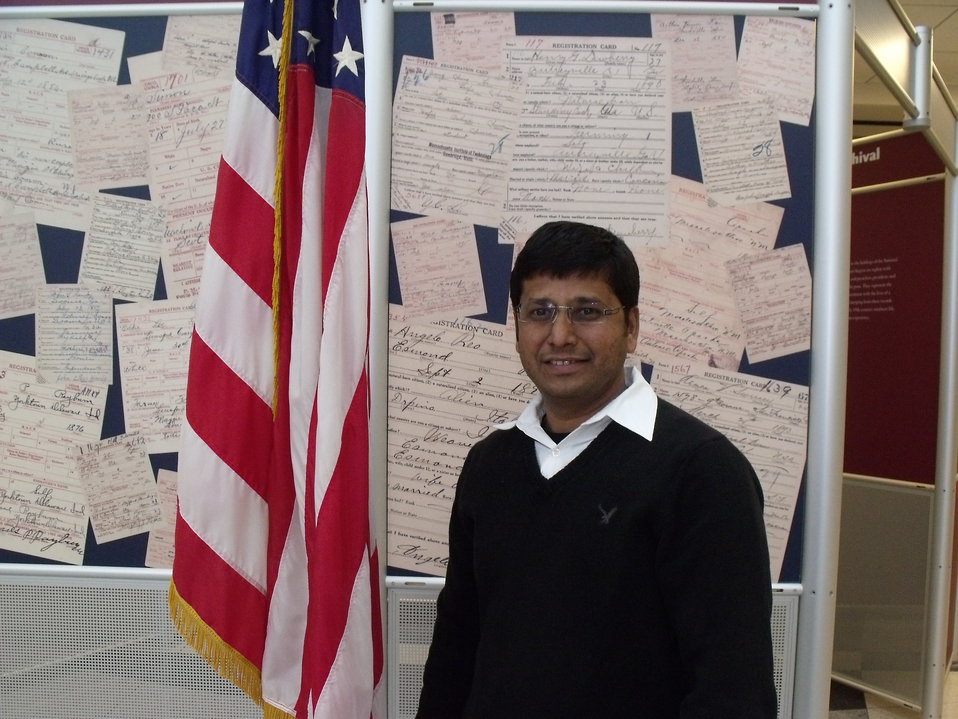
New Citizens